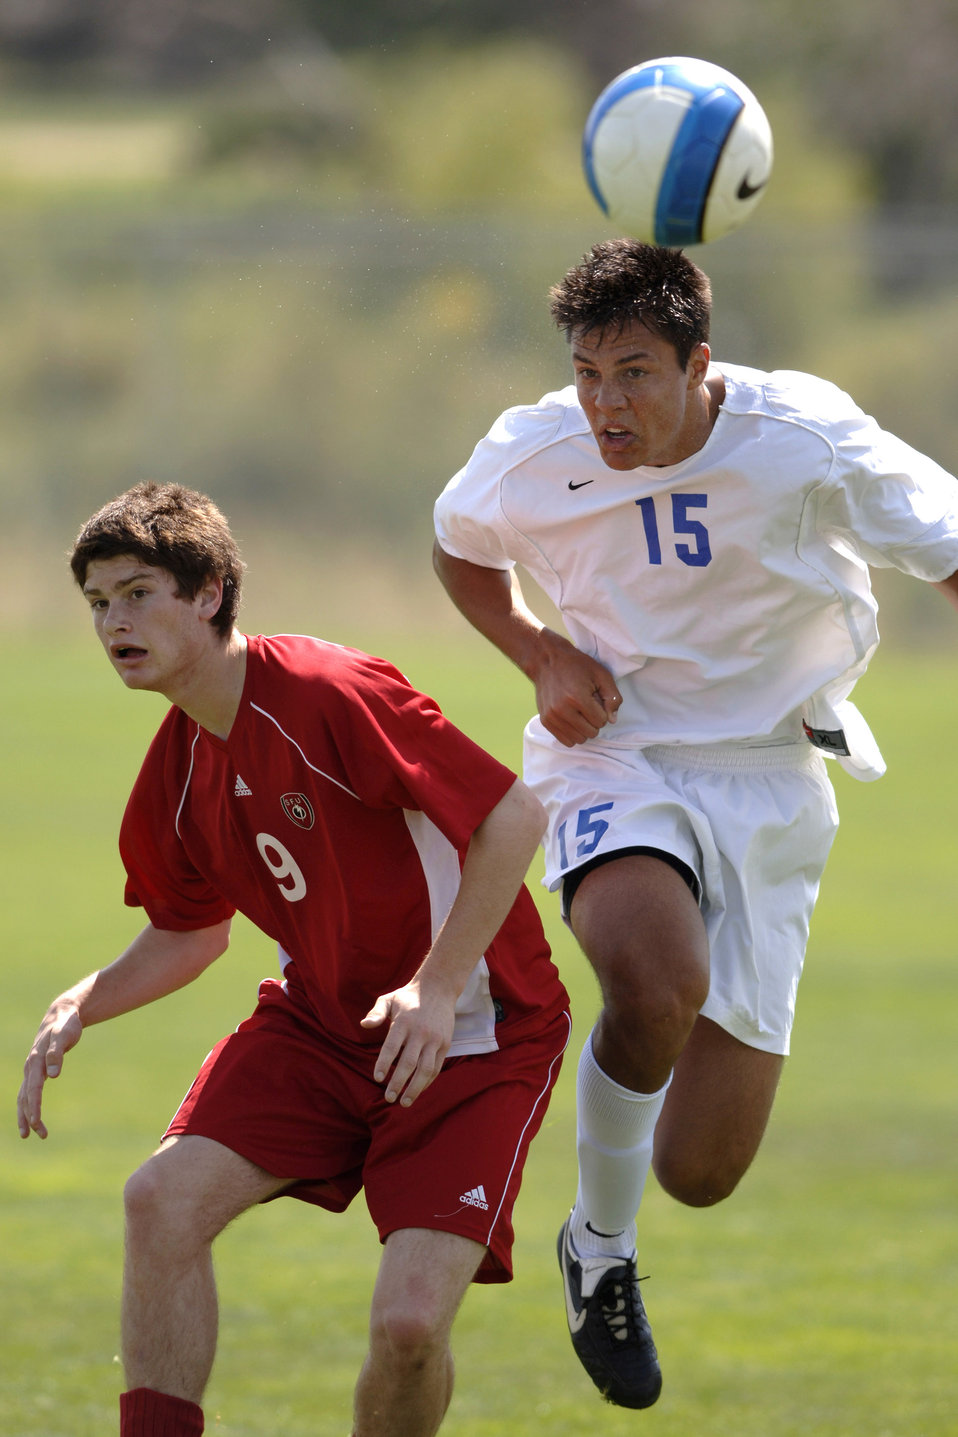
Falcons shut out St. Francis in soccer action

Sophomore Aaron Eshkenazi heads the ball as Air Force posts its second consecutive shutout with a 1-0 victory over St. Francis University in men's soccer action Sept. 9 at the U.S. Air Force Academy Cadet Soccer Stadium in Colorado Springs, Colo. With the victory, Air Force improved to 2-2 this season, while St. Francis fell to 1-3.